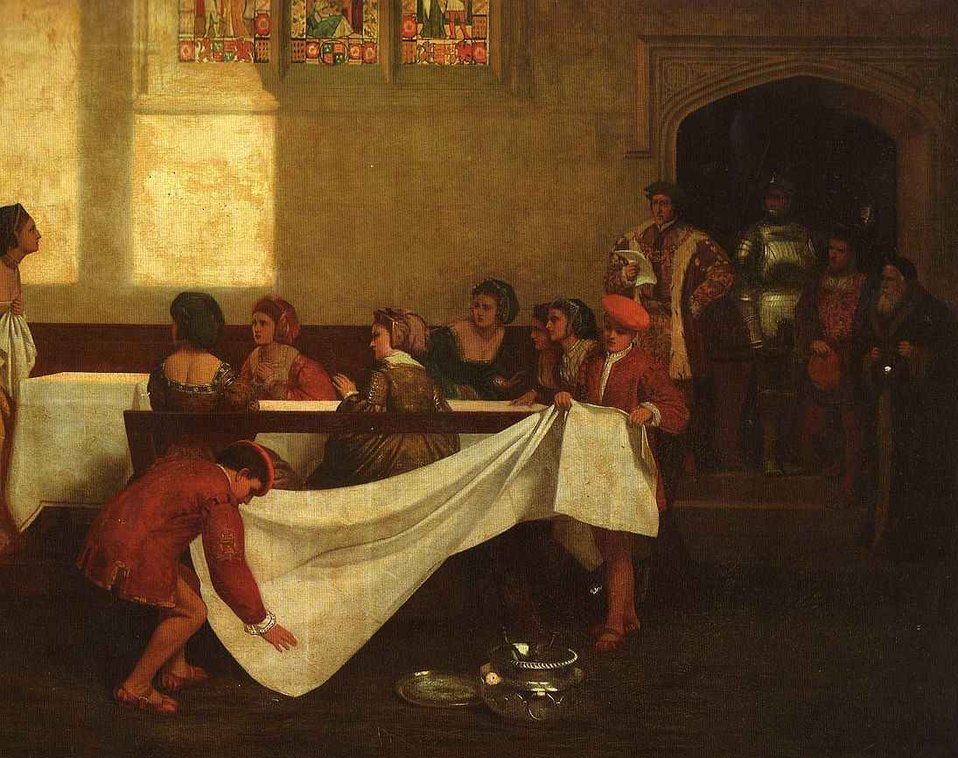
ArrestAnneBoleyn Wynfield